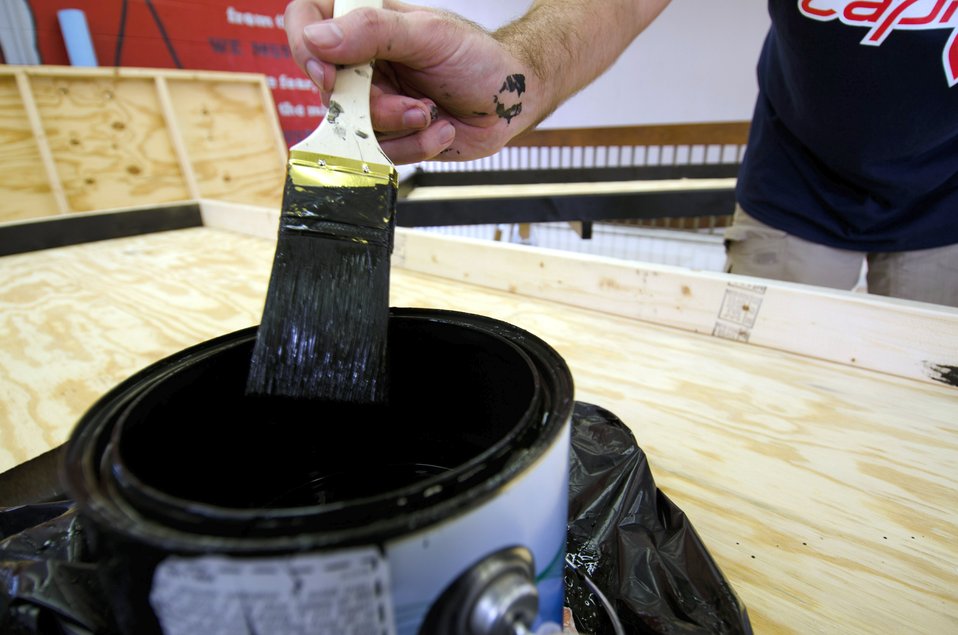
U.S. Department of Agriculture (USDA) People’s Garden Executive Master Gardeners, friends, and family, along with Washington Capitals fans are volunteering in District of Columbia Public Schools’ (DCPS) Beautification Day, on Saturday, August 25, 2012, at Thurgood Marshall Elementary School, in Washington, D.C. Each year people are invited to help “spruce up” public school facilities in preparation for the first day of school. More than 70 volunteers pitched in at this large school facility. The People’s Garden effort involves building and painting raised planter boxes, then preparing the soil mixture so they are “ready to grow.” Additionally, a team that includes descendants of U.S. Supreme Court Justice Thurgood Marshall assembles a prefabricated garden toolshed. The Justice’s son, John Marshall leads the team, which includes Brianna the Justice’s great-grand daughter in one of many multi-generational efforts at this school today. Washington Capitals Forward Mike Riberio, his family and mascot Slapshot participated in every project underway at Marshall School. From the outside gardens, to inside mural painting, and robotics worktable construction, the teams made their goals.